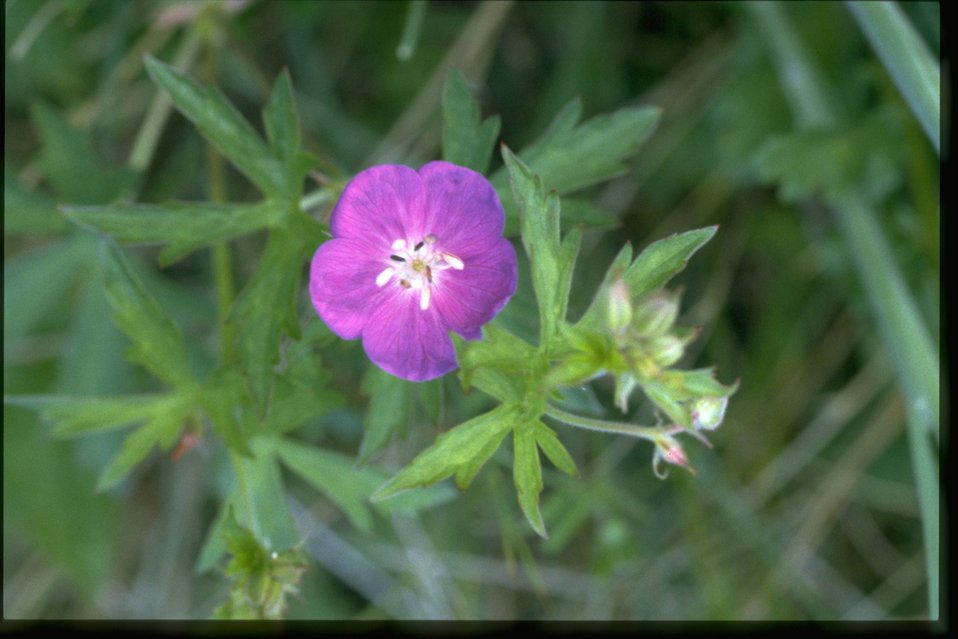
Medium shot of Geranium oreganum.